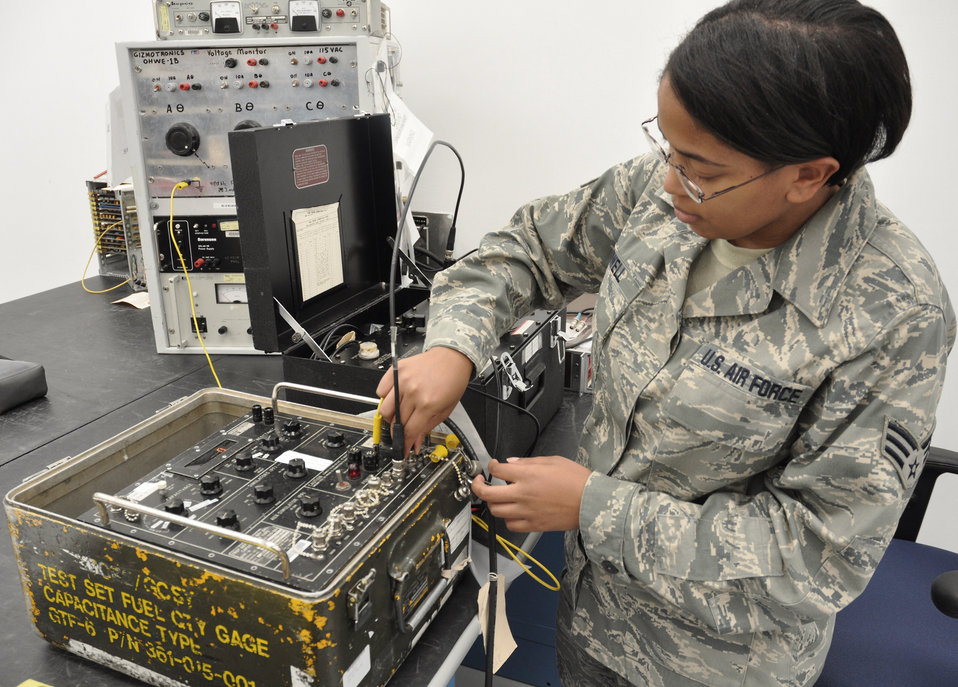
Precision: Everyday standard at base lab

Senior Airman Candace Powell calibrates a GTF-6 fuel-quantity test set. The equipment comes due for calibration every three months. Airman Powell is a Precision Measurement Equipment Laboratory technician in the 46th Maintenance Squadron at Eglin Air Force Base, Fla. The Eglin PMEL is responsible for maintaining more than 22,000 pieces of equipment assigned to 406 accounts.